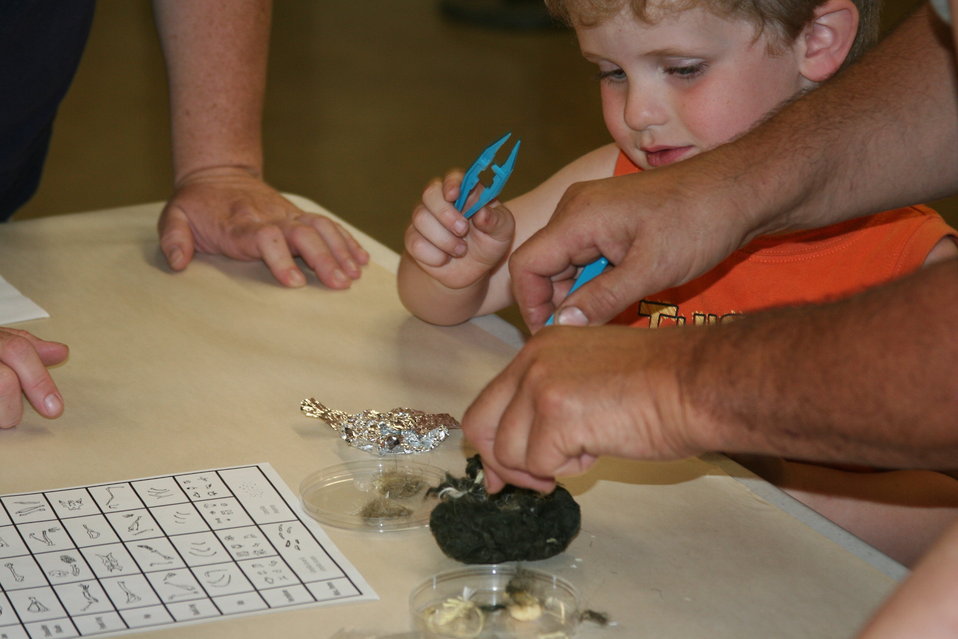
Creatures of the Night 2011